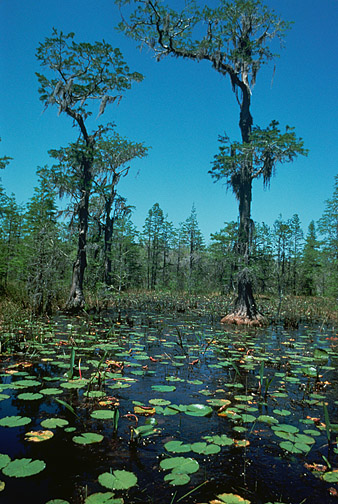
GA - Okefenokee Refuge